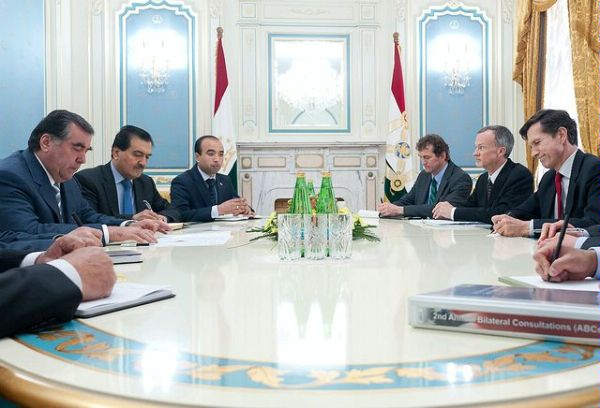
Assistant Secretary Blake Meets With Tajik President Rahmon

Assistant Secretary of State for South and Central Asian Affairs Robert O. Blake meets with Tajik President Emomali Rahmon to express appreciation for Tajikistan's support of coalition efforts in Afghanistan, discuss bilateral cooperation, and highlight areas of concern regarding human rights and media freedom, in Dushanbe, Tajikistan, on April 12, 2011.